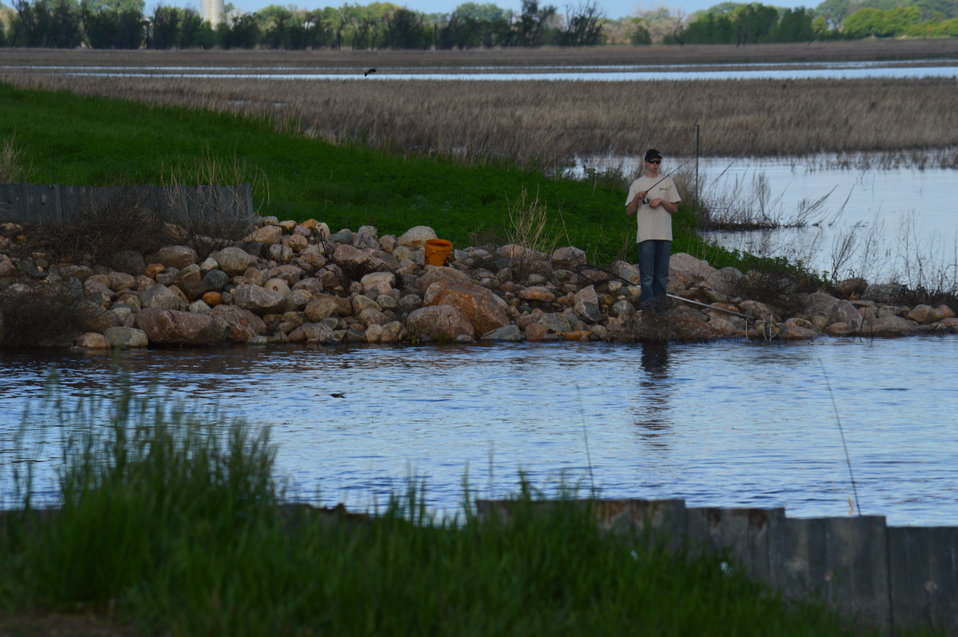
Fishing

Scenery and wildlife at Sand Lake National Wildlife Refuge in South Dakota